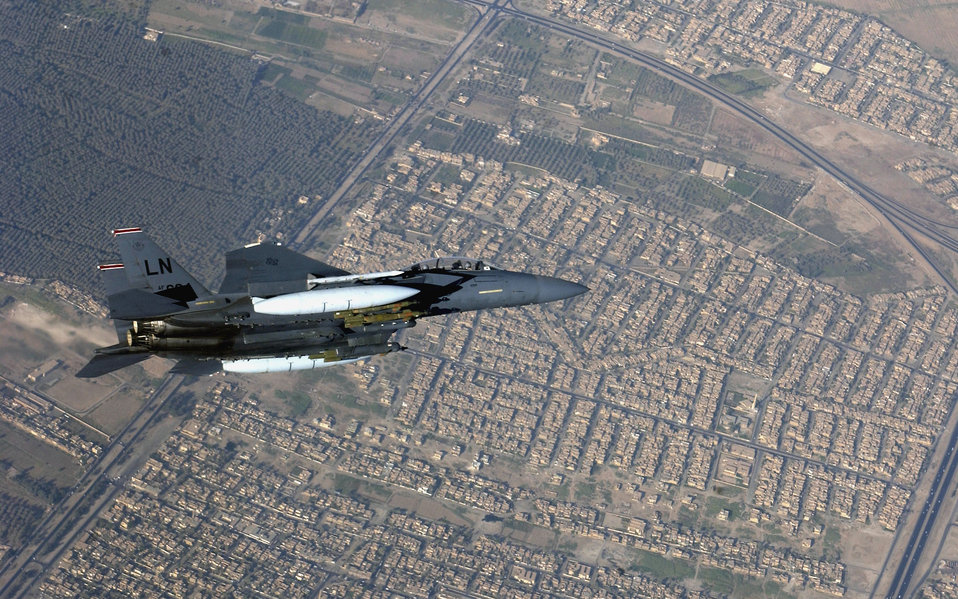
Combat air support

OPERATION IRAQI FREEDOM -- An F-15E Strike Eagle from the 494th Expeditionary Fighter Squadron patrols the skies over Baghdad, Iraq, during a combat air support mission Aug. 28. The 494th deployed here from Royal Air Force Lakenheath, England, to support Operation Iraqi Freedom.